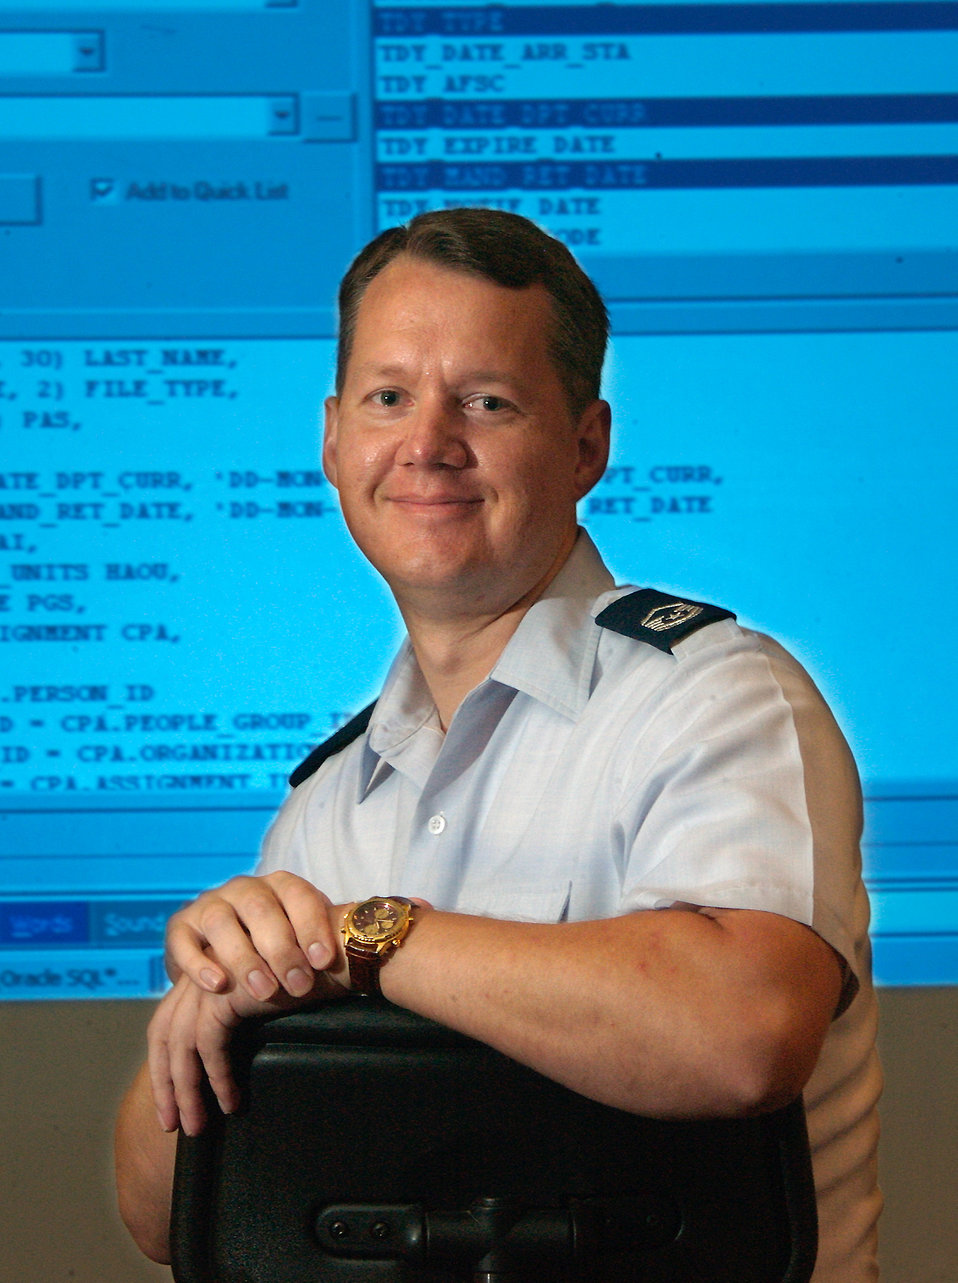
Derlein

RANDOLPH AIR FORCE BASE, Texas -- Master Sgt. Dan Derlein is still working more than a year after being diagnosed with Parkinson's disease and facing a medical-evaluation board. He is a computer programmer at the Air Force Personnel Center here.